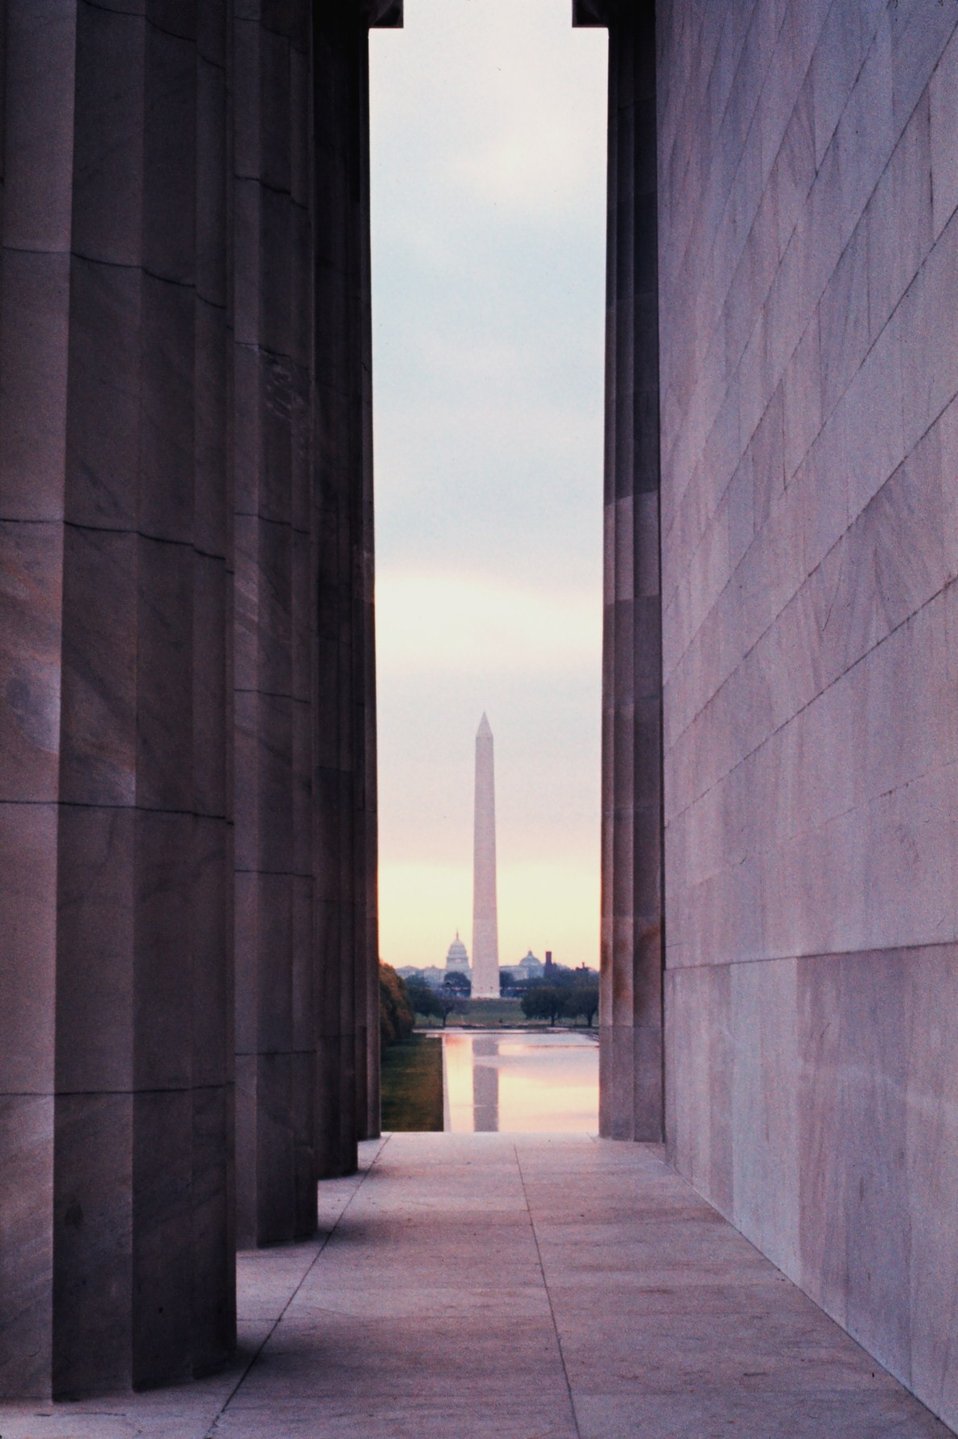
The Washington Monument reflected in the Reflecting Pool as seen from the Lincoln Memorial